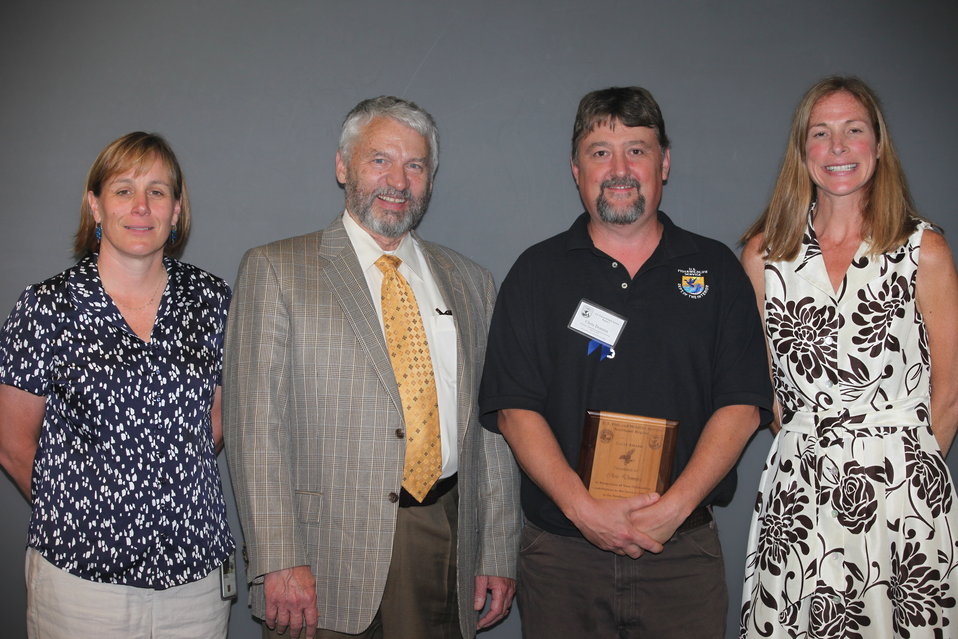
Chris Domina of the Craig Brook National Fish Hatchery recieved an Eagle Award.
From left to right: Deputy Regional Director Deb Rocque, Deputy Director Rowan Gould, Chris Domina, and Regional Director Wendi Weber